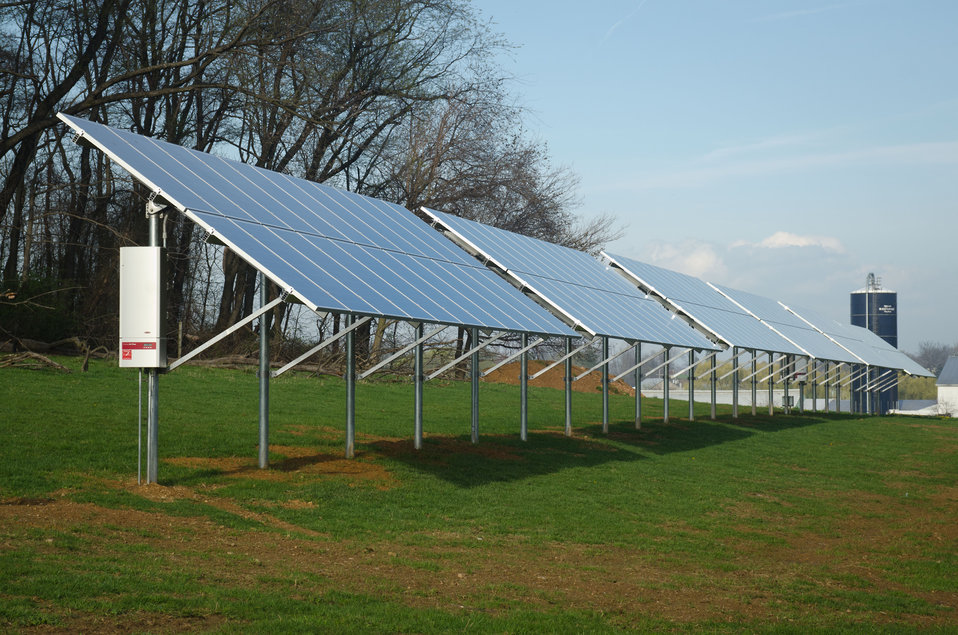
Some of the 240 solar panels at Seldom Rest Farms located, north of Myerstown, PA, on Wednesday, April 20, 2011. The farm raises crops, sheep and 17,000 hens. The Hens are kept in a two story chicken house and produce approximately 2.5 million chicks each year. To supplement their electrical needs, they chose a contractor who knew about United States Department of Agriculture (USDA) Rural Energy for America program (REAP) grants and helped them through the application process. The farm was awarded a $152,000 grant (25% of the cost). to install the 1001kW solar array to power their farm, a neighboring farm and homes on the local electrical grid. The 240 solar panels were ground mounted with 5-foot clearance underneath to allow sheep to graze and rest underneath protected from the rain, sun or snowfall. Ten inverters change the DC electrical energy from the panels into AC energy that goes into the local power grid. Spring statistics show it is producing more than expected. REAP offers grants and/or loan guarantees for the purchase and installation of renewable energy generating systems and for energy efficiency improvements.